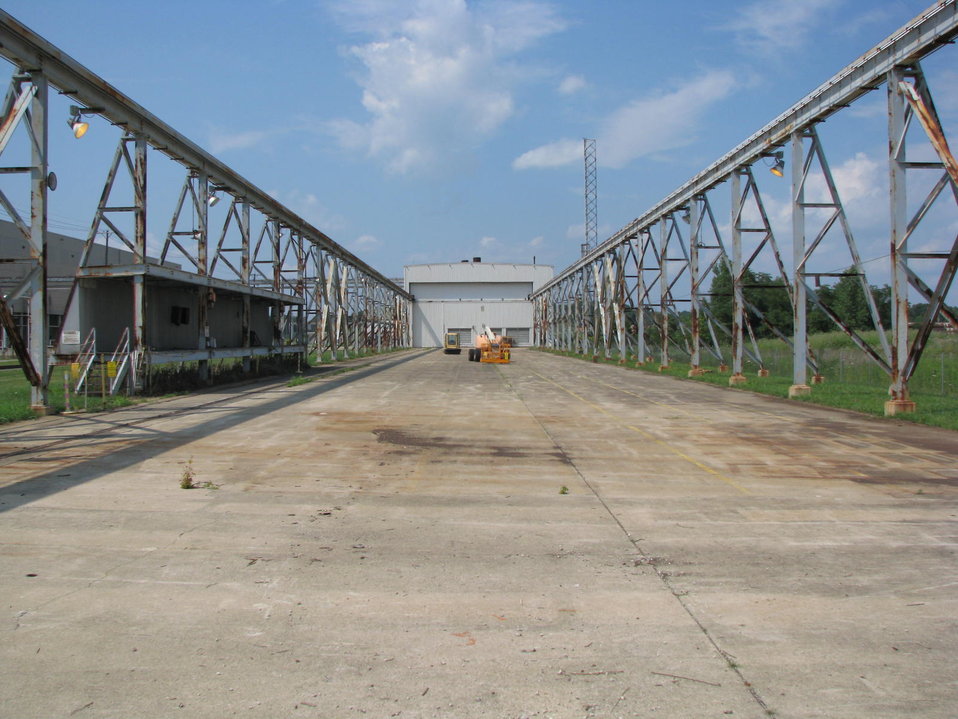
Piketon Recovery Act Update: Uranium Materials Disposal Continues

These photos show a storage area before and after workers removed excess uranium materials.